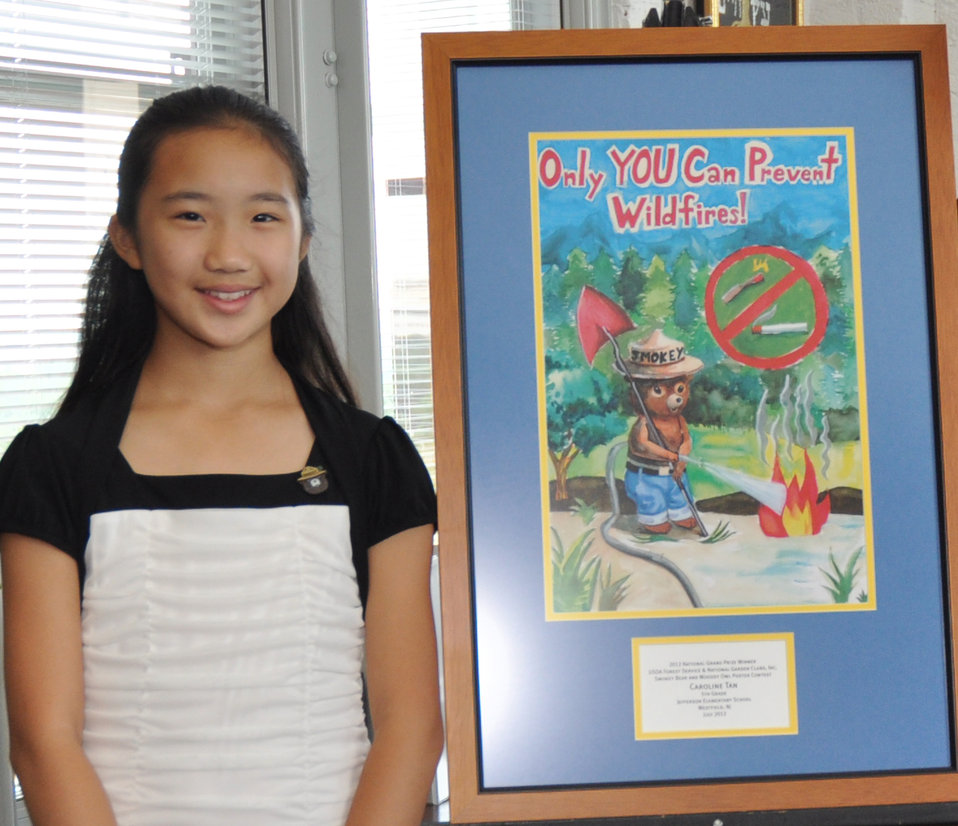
20120710 2012 Poster Contest 149

Caroline Tan, 11, from Westfield, NJ poses with her winning poster that earned her the title of national winner in the Smokey Bear and Woodsy Owl Poster Contest on July 10, 2012.